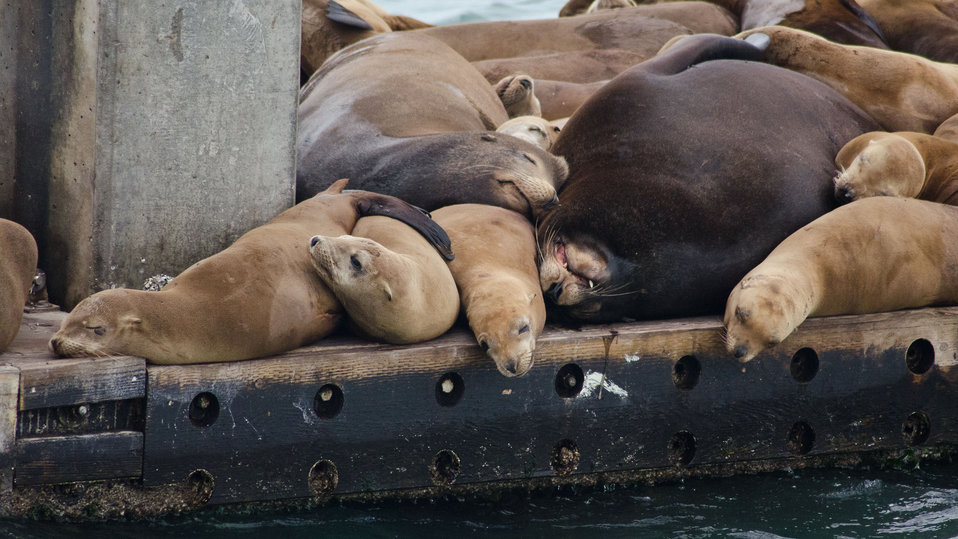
Sea lions and harbor seals rest on a visitor’s pier at Moss Landing, CA., on Thursday, June 16, 2011. Clarity of the water below them is related to the amount of silt and sediment, above natural levels, that flows into the Monterey Bay National Marine Sanctuary in the coastal waters of California.